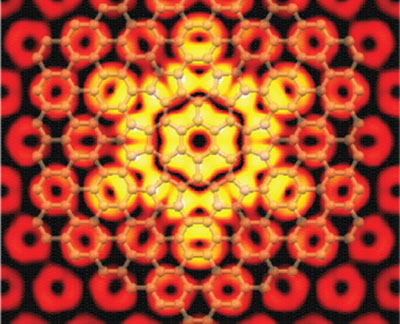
Graphene Flowers

A simulated image produced through computer modeling of defects in graphene shows excellent agreement with actual flower-like defects that can occur during the fabrication process.